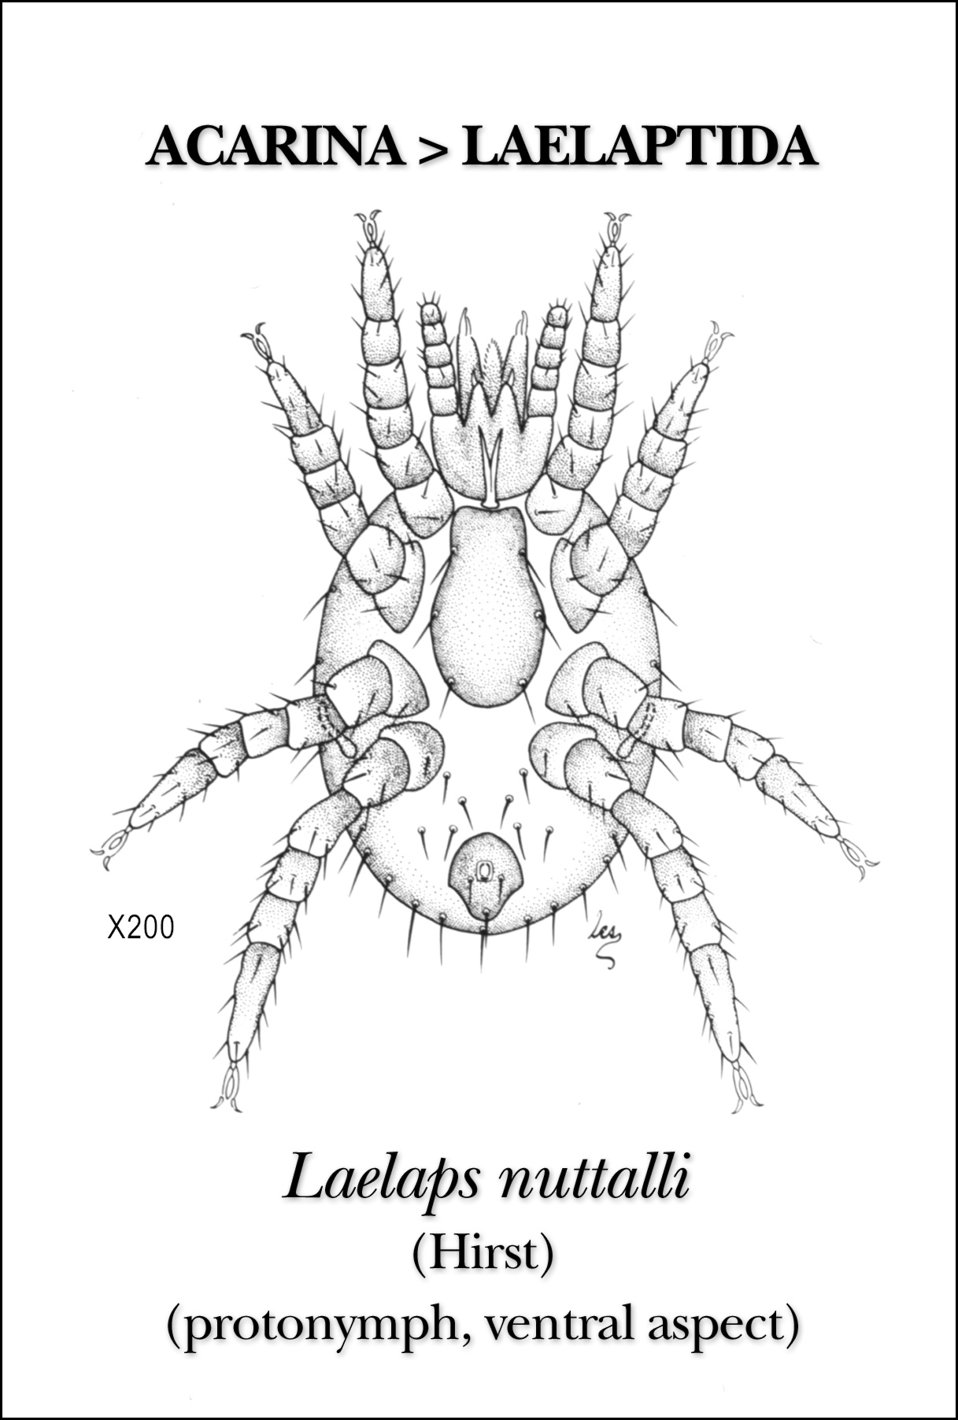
This illustration reveals the morphologic features on the ventral surface of the protonymph staged mite, Laelaps nuttalli.